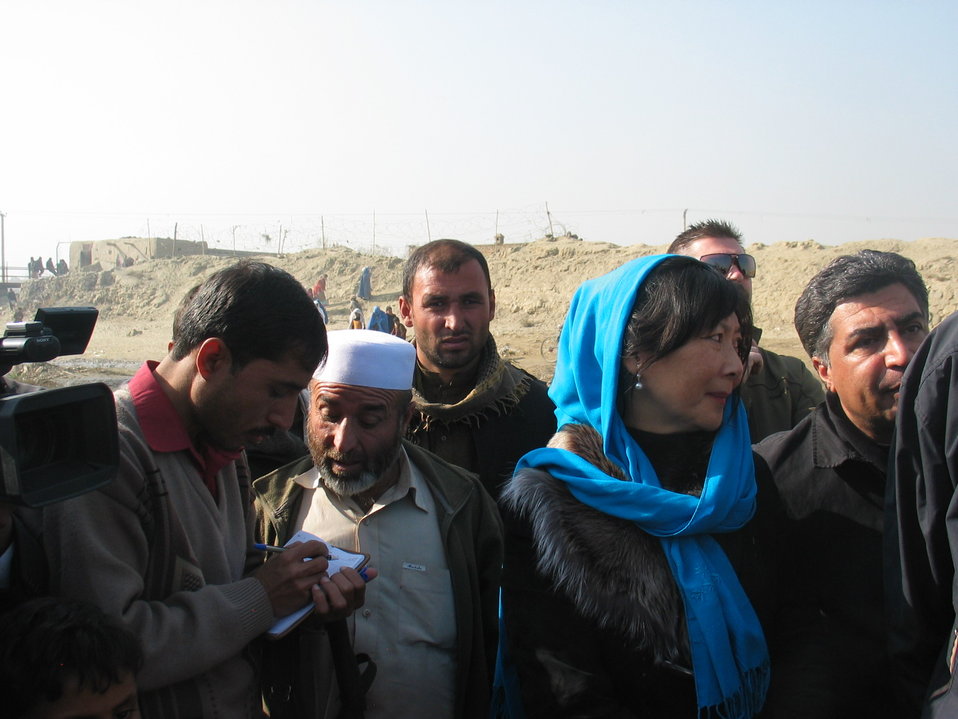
Kabul River Bridge Renovation, December 3, 2010